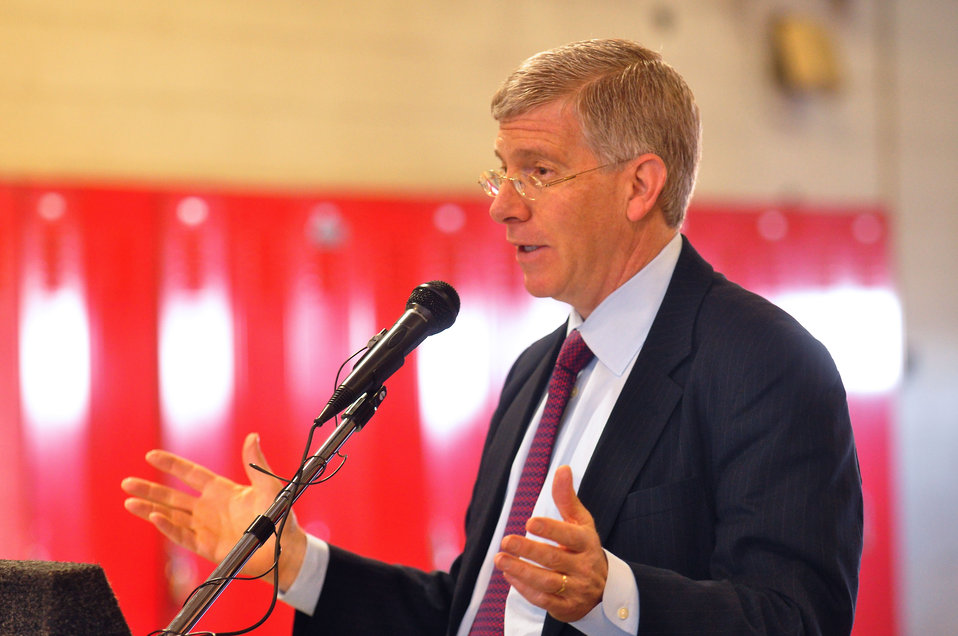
Last Part of K-25 Coming Down Oak Ridge 2013

13-157-1 DOE photo Lynn
12-19-2013 Daniel Poneman Deputy Secretary of Energy Oak Ridge Tennessee